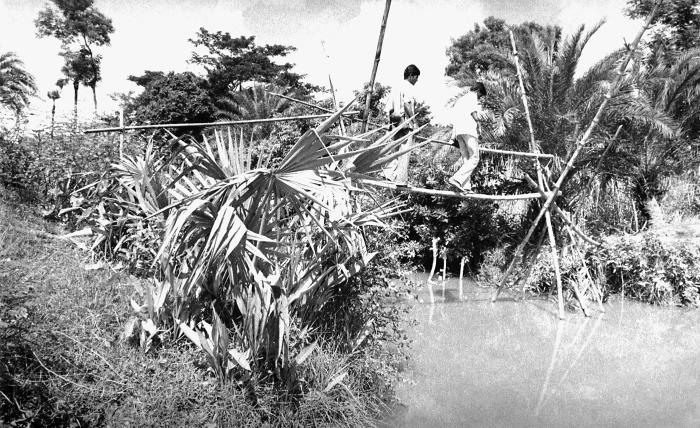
These two smallpox eradication team members were photographed as they crossed a rivulet by balance-walking on a single-span bamboo bridge. This photograph provided by Dr. Stan Foster, and captured by Pierre Claquin, M.D., B.A.C., who at the time was a member of the World Health Organization's Smallpox Eradication Program. It was part of a series photographed by former E.I.S. officer, Stanley O. Foster M.D., M.P.H., and was one of a series entitled 'The Story of One Smallpox Jeep', which depicted the travails faced by the jeep, and its occupants of public health practitioners, as they road through the Bangladesh countryside in an attempt to eradicate smallpox from the country.